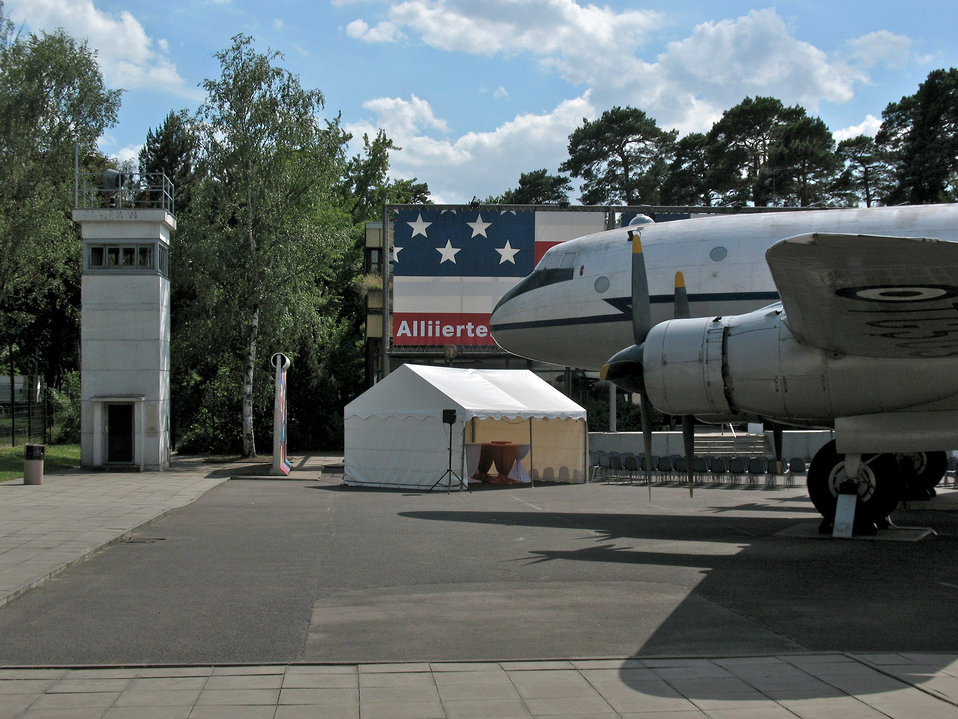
Veterans honor Berlin Airlift's 60th anniversary

A Royal Air Force Hastings TG-503 cargo plane used during the Berlin Airlift is the centerpiece of the Allied Museum city officials host the 60th Anniversary of the Berlin Airlift June 26 in Berlin.